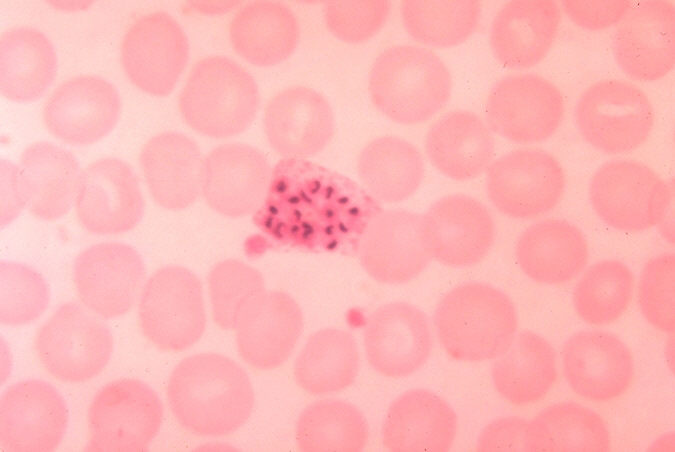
Plasmodium vivax immature schizont in blood smear.